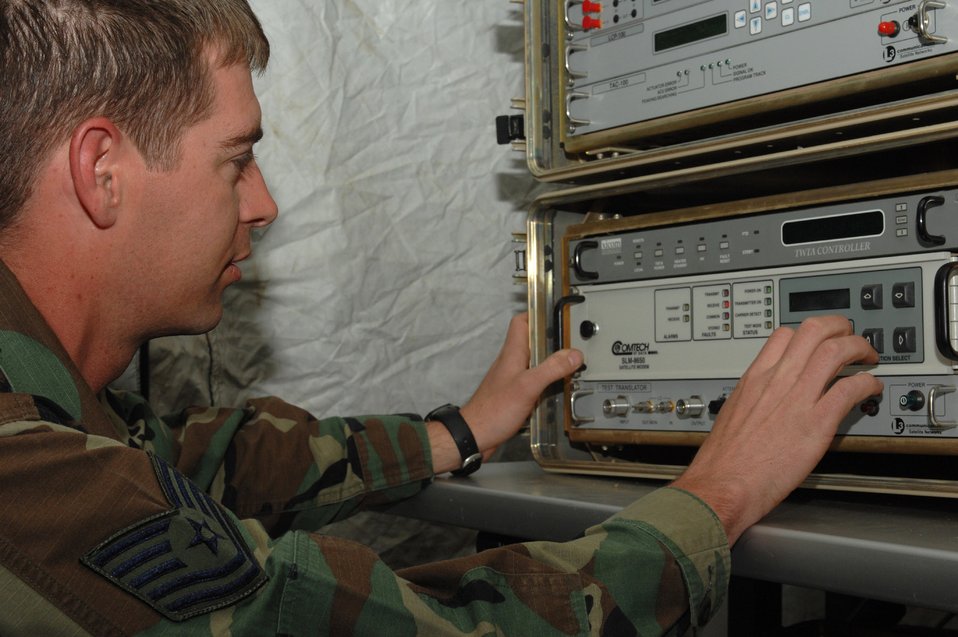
Airmen set up communication lines for exercises in Croatia

Tech. Sgt. Brett Olsen adjusts a modem April 29 at Divulje Training Base, Croatia. He is part of the forward team supporting Medical Central and Eastern Europe Exercise 2008, which 17 nations are participating in that runs May 2 through 15. The exercise focuses on mass-casualty training scenarios and humanitarian aid in response to crises situations. More than 400 multinationals are attending the exercise in support of the Partnership for Peace initiative. Sergeant Olsen is assigned to the 1st Combat Communications Squadron from Ramstein Air Base, Germany.